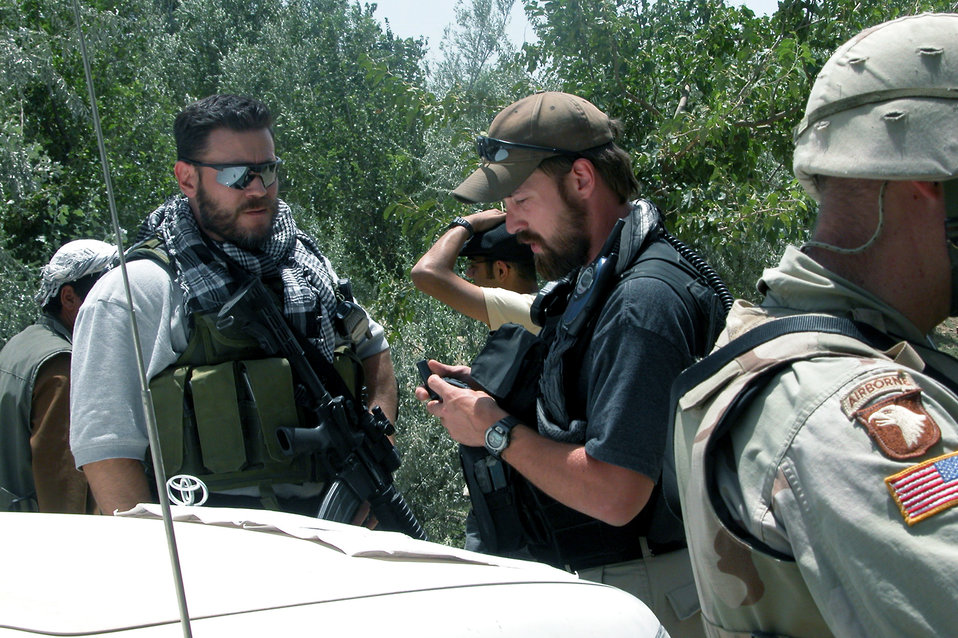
Keeping Bagram safe

BAGRAM AIR BASE, Afghanistan -- Special Agents Jeff Rutherford (left) and Isaac Suydam plan a response while investigating an explosion near here. The two discovered an explosive extraction operation where the subject killed himself after accidentally triggering the explosive. They are assigned to the Air Force Office of Special Investigation detachment here.